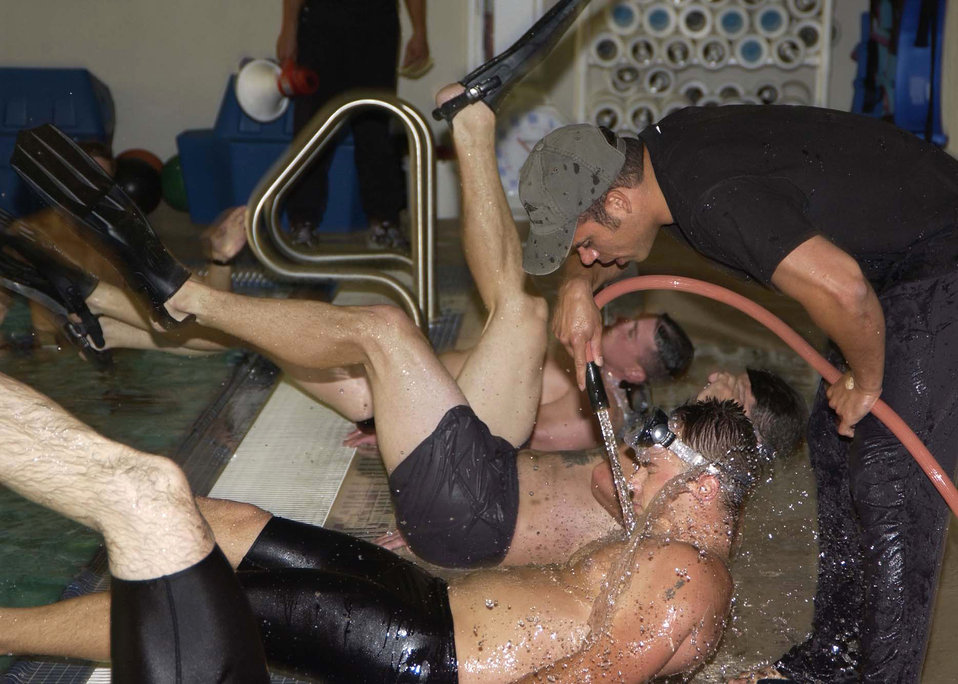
PJ selection process

Tech. Sgt. Isaiah Staley sprays applicants during the 306th Rescue Squadron pararescue screening Friday, April 21, 2006, at Davis-Monthan Air Force Base, Ariz. Applicants must pass a timed 3-mile run, 1,500-meter swim, calisthenics and other tasks before proceeding to the 10-week indoctrination course at Lackland AFB, Texas. Sergeant Staley is a pararescueman with the 306th.